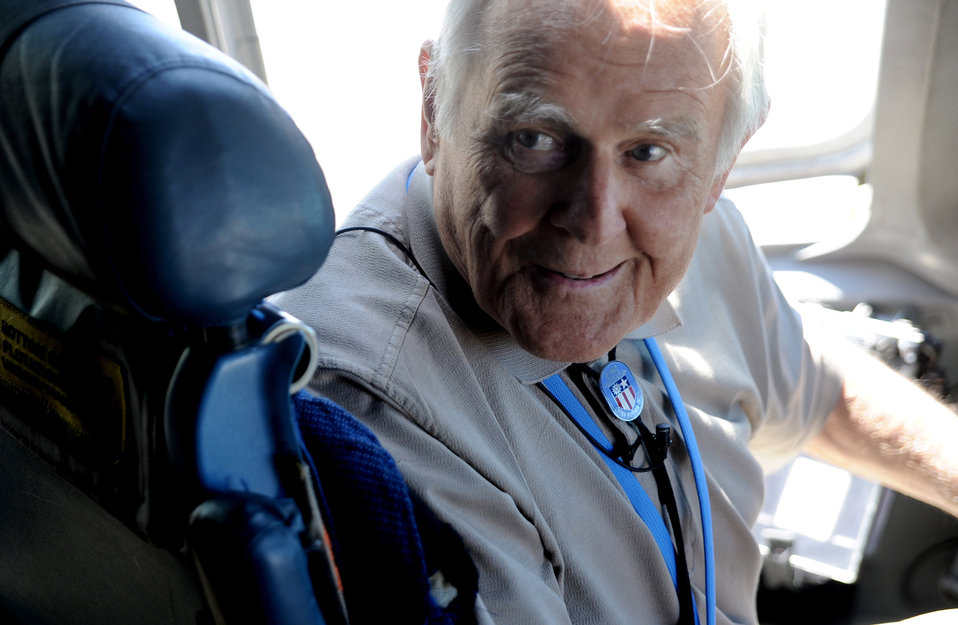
'Hump' pilots mark 65th reunion

Retired Col. Bill Thomas sits in the cockpit of a static C-17 Globemaster III, May 5, 2011 at Joint Base Charleston, S.C. Colonel Thomas was a World War II